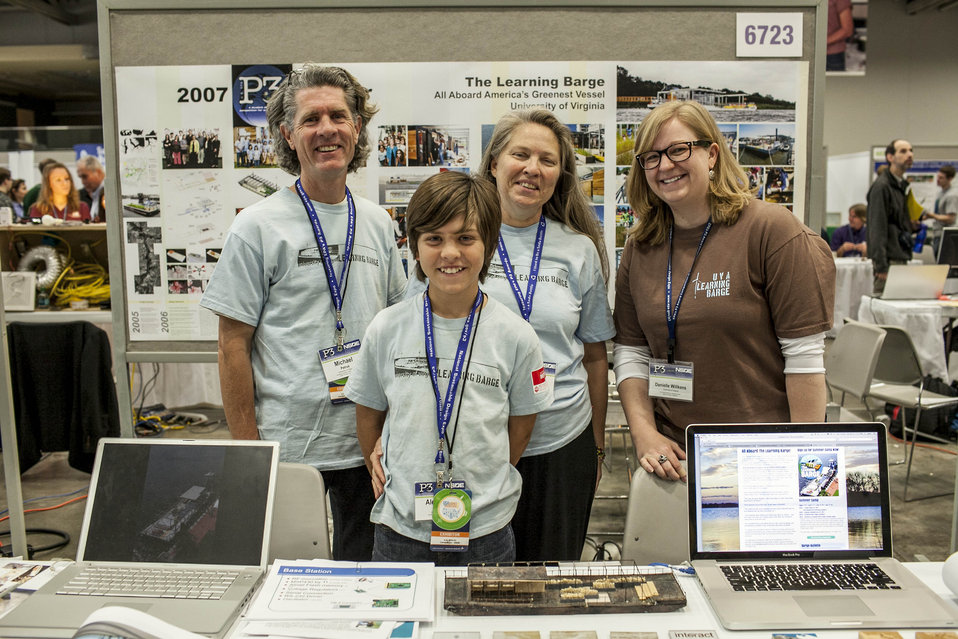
2014 P3 Competition

Members of the 2007 EPA P3 Award winning team from the University of Virginia share their exciting progress for the Learning Barge, a floating wetlands barge. Since launched in the Elizabeth River, Virginia in 2009, the barge has had nearly 45,000 visitors including more than 26,000 students.